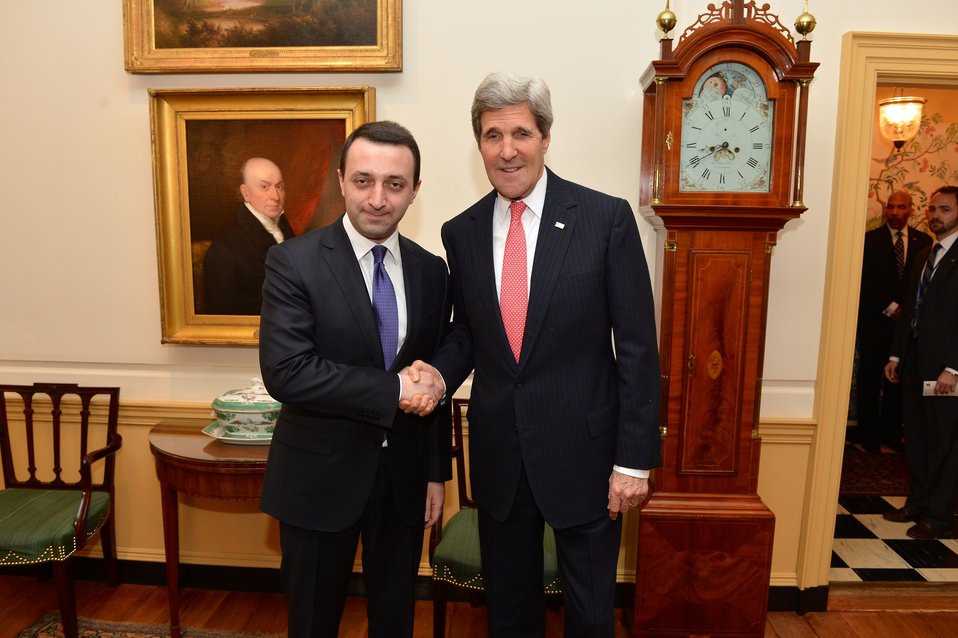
Secretary Kerry Meets With Georgian Prime Minister Garibashvili

U.S. Secretary of State John Kerry meets with Georgian Prime Minister Irakli Garibashvili at the U.S. Department of State in Washington, D.C., on February 26, 2014.